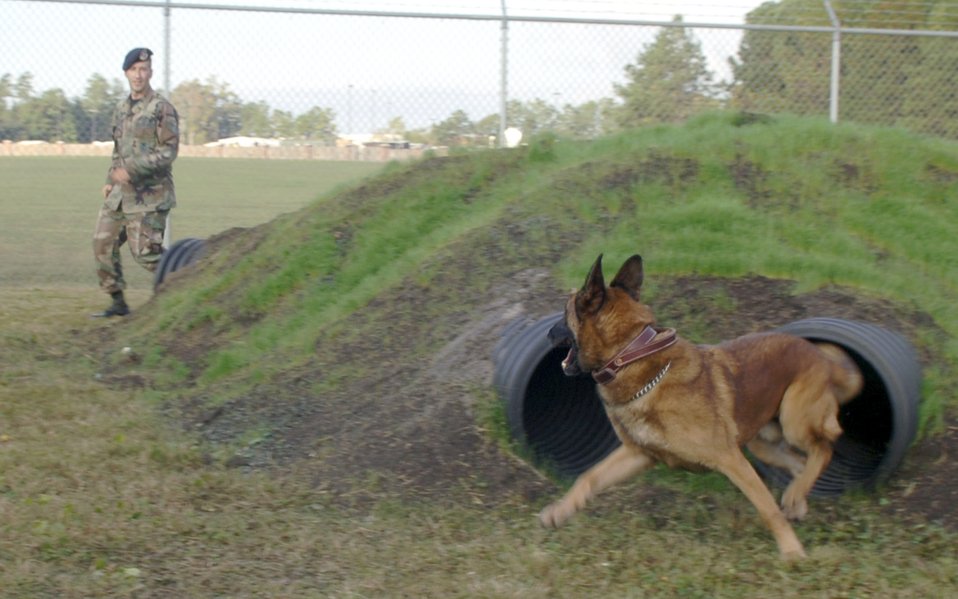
K-9 training grounds

Staff Sgt. Clifton Lingle guides Athos, a military working dog, through the new K-9 training grounds at Charleston Air Force Base, S.C., Oct 20. Sergeant Lingle and Athos are with the 437th Security Forces Squadron.